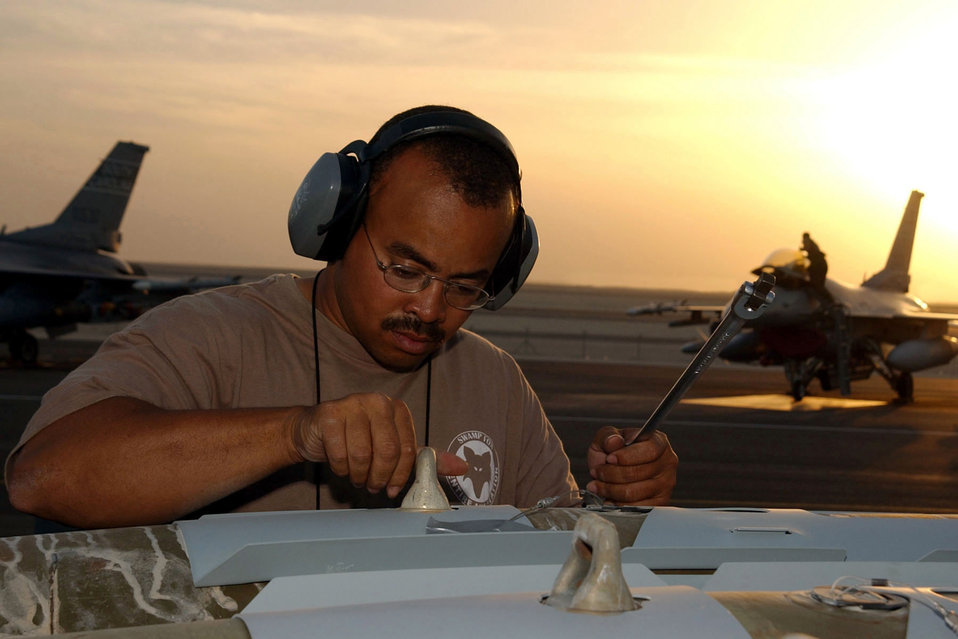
King

OPERATION IRAQI FREEDOM -- These GBU-31A bombs will be loaded on F-16CJ fighters of the 157th Expeditionary Fighter Squadron. Tech. Sgt Anthony King, a weapons technician from the 157th Aircraft Maintenance Unit, prepares them before they are loaded. The 157th EFS and the 157th AMU are assigned to the 379th Air Expeditionary Wing. The 379th AEW is a forward deployed unit in Southwest Asia, supporting Operation Iraqi Freedom. Both units are deployed from the South Carolina Air National Guard of the 169th Fighter Wing.